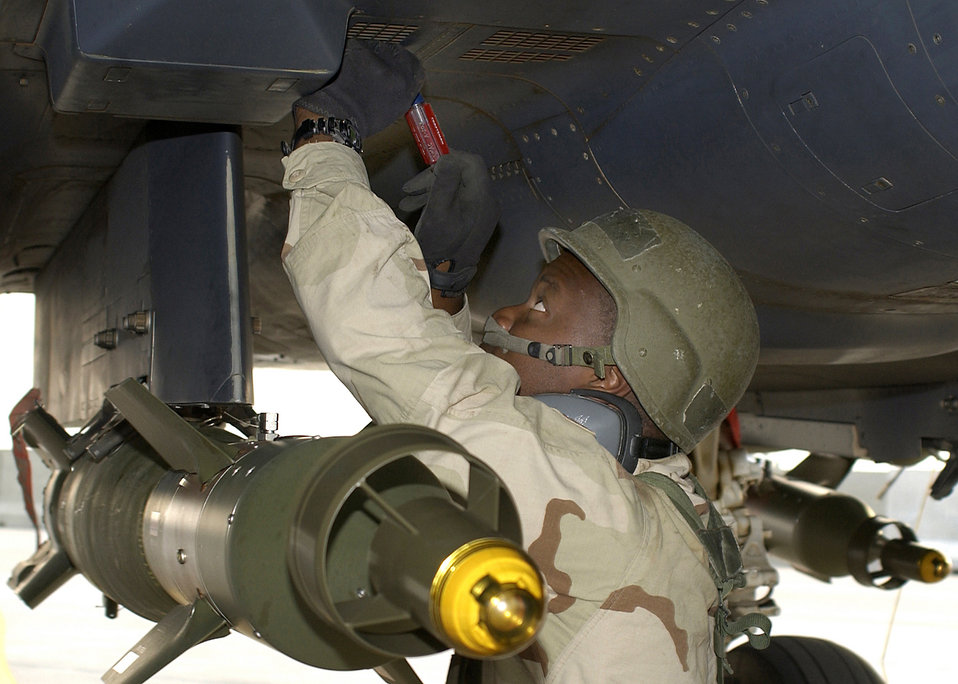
Focus on the job

OPERATION IRAQI FREEDOM -- Senior Airman Mackenzie Wright, a weapons specialist with the 334th Expeditionary Fighter Squadron, Seymour Johnson Aie Force Base, S.C., stays focused on getting a GBU-12 bomb loaded on an F-15E Strike Eagle. Wright, from Dublin, Ga., is getting this Strike Eagle ready for a night mission on March 30, 2003. The Strike Eagles are assigned to this forward-deployed air base in support of Operation Iraqi Freedom